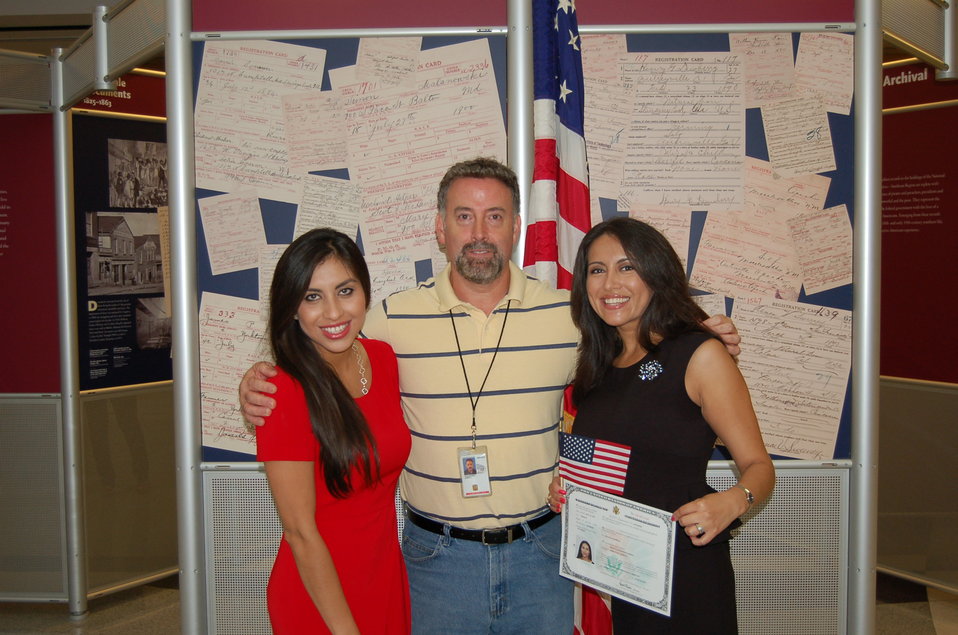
New Citizens